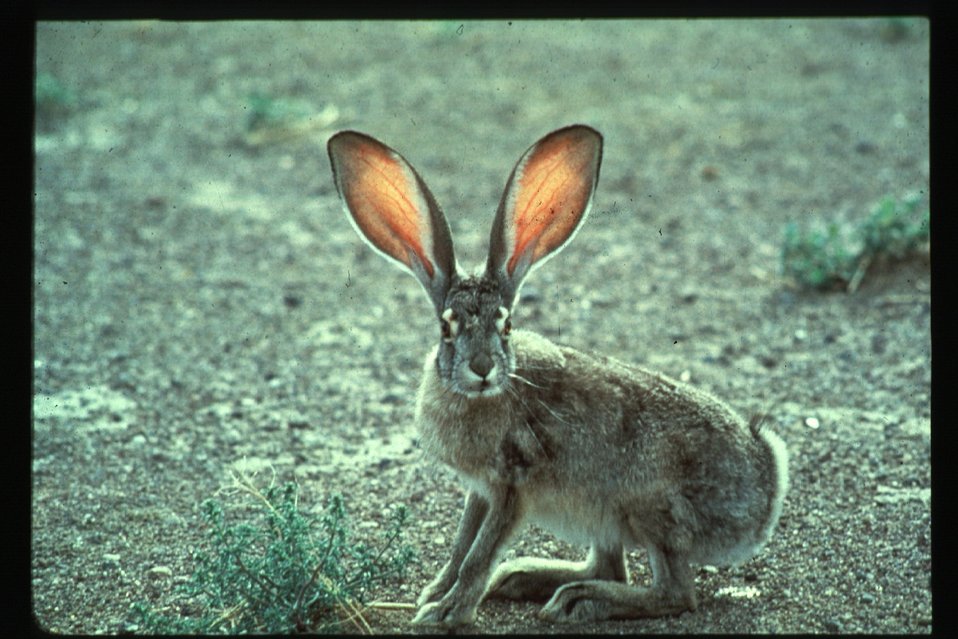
Black-tailed Jack Rabbit Wildlife Birds of Prey National Conservation Area BOP NCA Owyhee Field Office LSRD Lower Snake River District